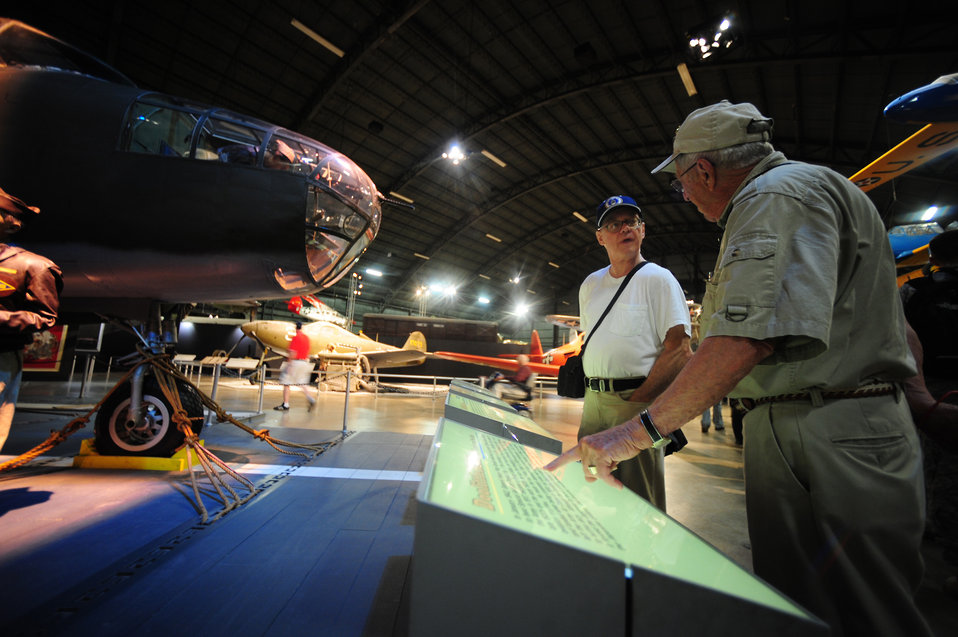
68th Doolittle Raiders Reunion

Visitors discuss the information on the panels of the Doolittle Raiders diorama showing a B-25 on a aircraft carrier deck at the National Museum of the U.S. Air Force, Wright-Patterson Air Force Base, Ohio, April 16, 2010, during the 68th reunion of the Doolittle Raiders. The event commemorates the anniversary of the Doolittle Tokyo Raid. On April 18th, 1942, U.S. Army Air Forces Lt. Col. Jimmy Doolittle's squadron of 16 B-25s too off from an aircraft carrier and bombed targets in response to the Japanese attack on Pearl Harbor.